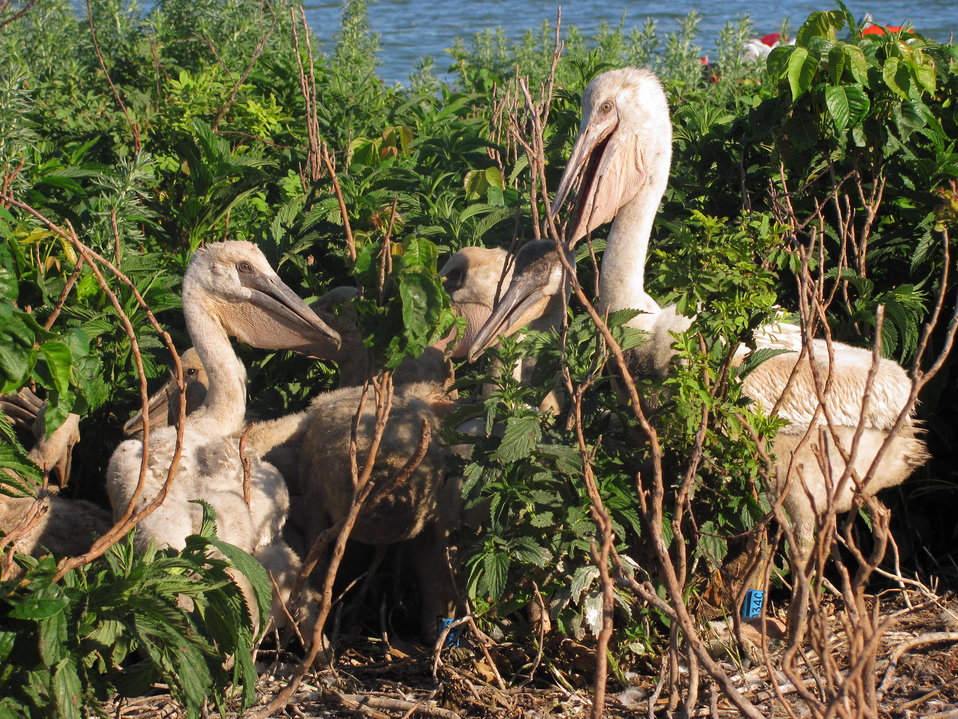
Small Creche

This small creche was formed right after these pelicans were banded. Two of the juvenile pelicans have colored blue bands on them.